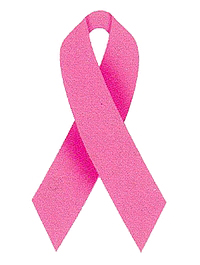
Cancer awareness key step to survival